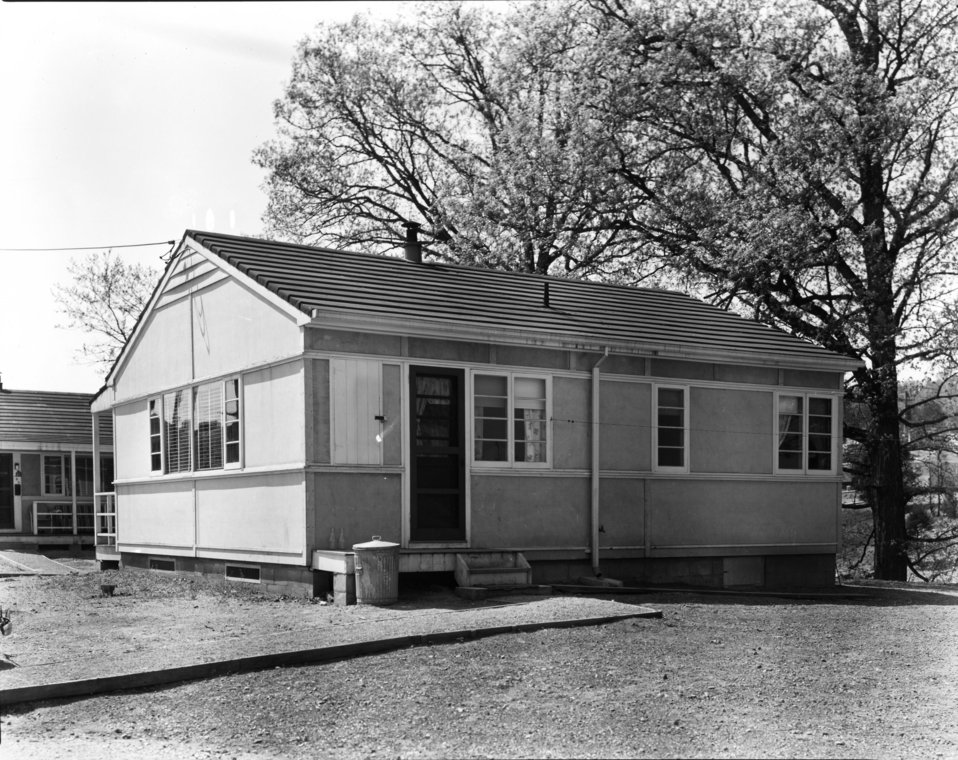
Housing at Oak Ridge